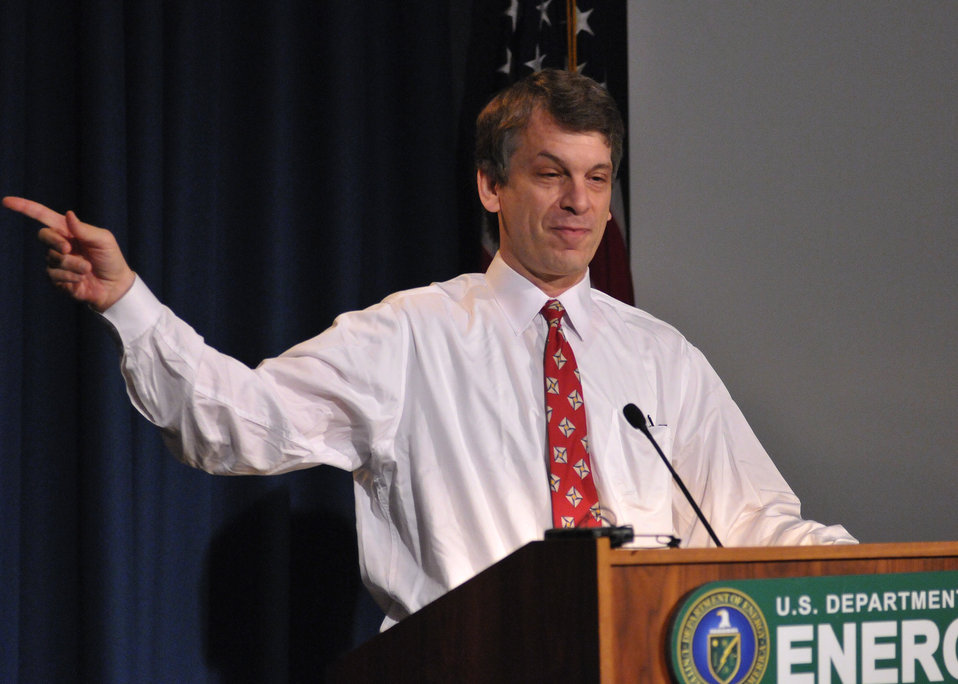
David Sandalow